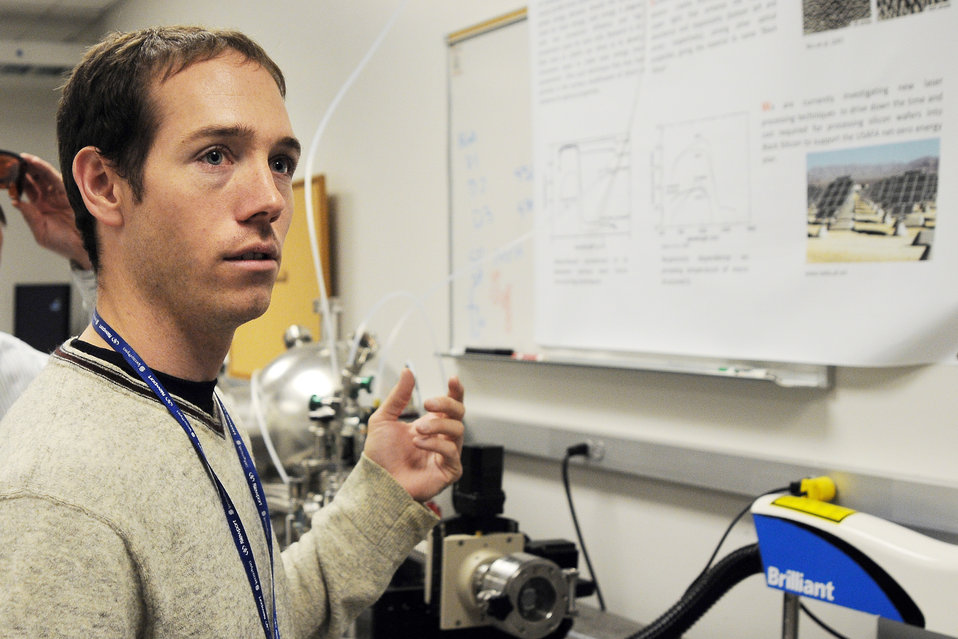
Physicists probe mystery of black silicon

Dr. Michael Shaffer describes a research project Oct. 9, 2009, to determine why black silicon, a product from sulfur being added to silicon using lasers, absorbs up to 500 times more light than regular silicon. The research, underway at the U.S. Air Force Academy in Colorado Springs, Colo., may decrease the cost per kilowatt-hour to produce solar energy. Doctor Shaffer is a contractor with MITRE Corporation.